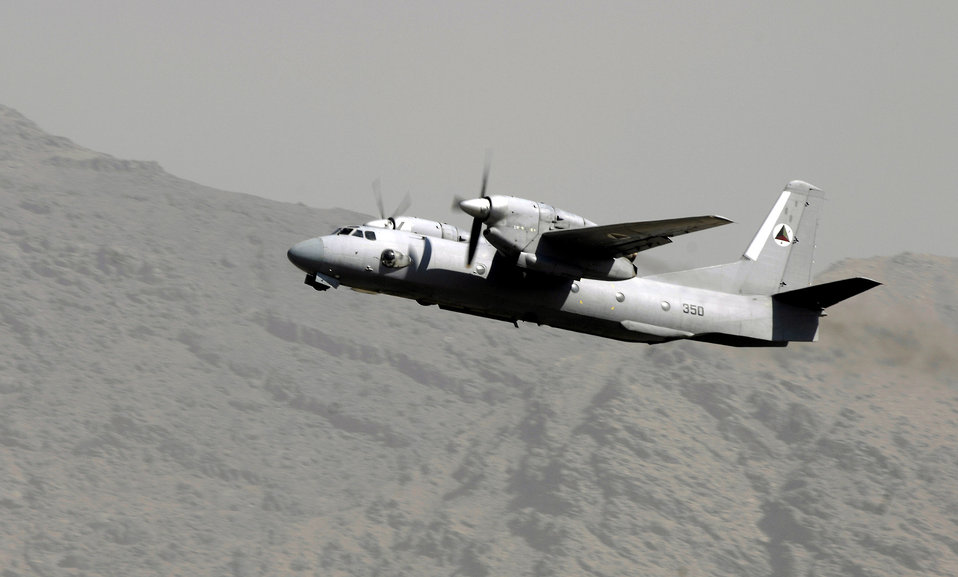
Joint team helps build Afghan air corps

An Afghan national army air corps AN-32 cargo plane takes off Oct. 18 at Kabul International Airport, Afghanistan. The plane's mission is to fly winter supplies to ANA troops in Kandahar. The ANA air corps has been able to fly more cargo to support their own troops due to the recent introduction and training of aircraft loadmasters.